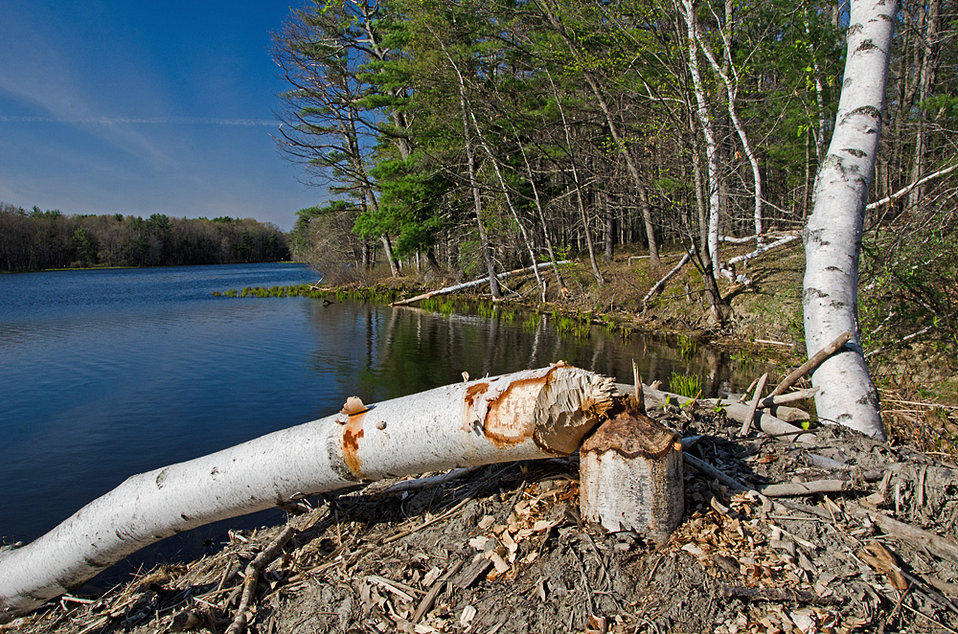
Beaver chew

Great Bay National Wildlife Refuge, MA.